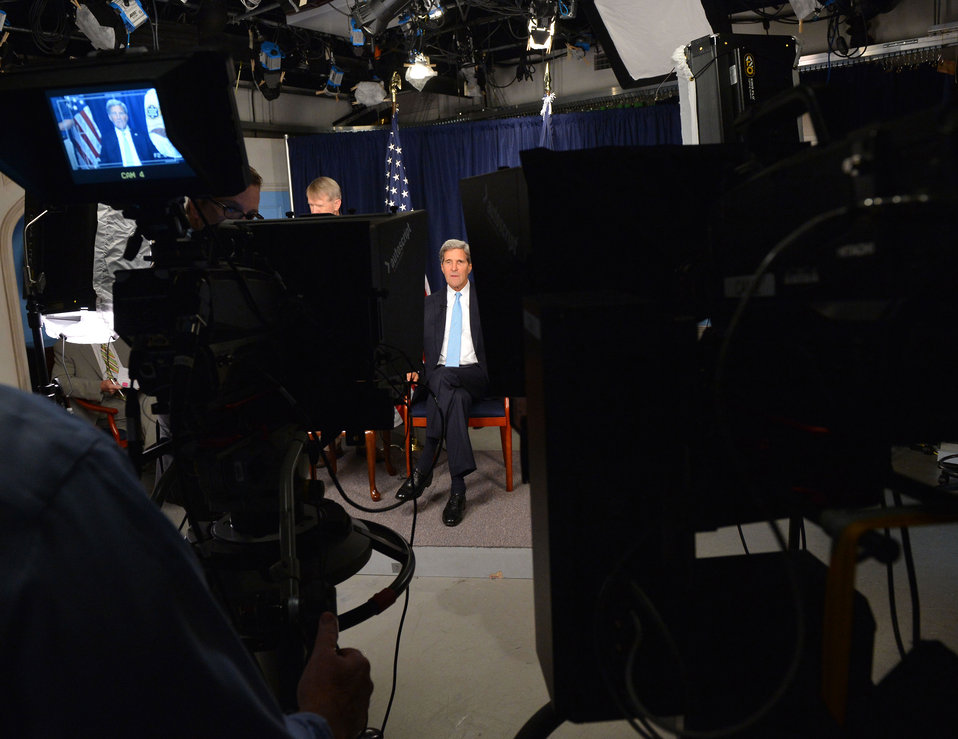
Secretary Kerry Prepares for his Google Hangout on Syria

U.S. Secretary of State John Kerry prepares for his Google Hangout with the New York Time's Nicholas Kristof and Syria Deeply's Lara Setrakian at the U.S. Department of State in Washington, DC on September 10, 2013.